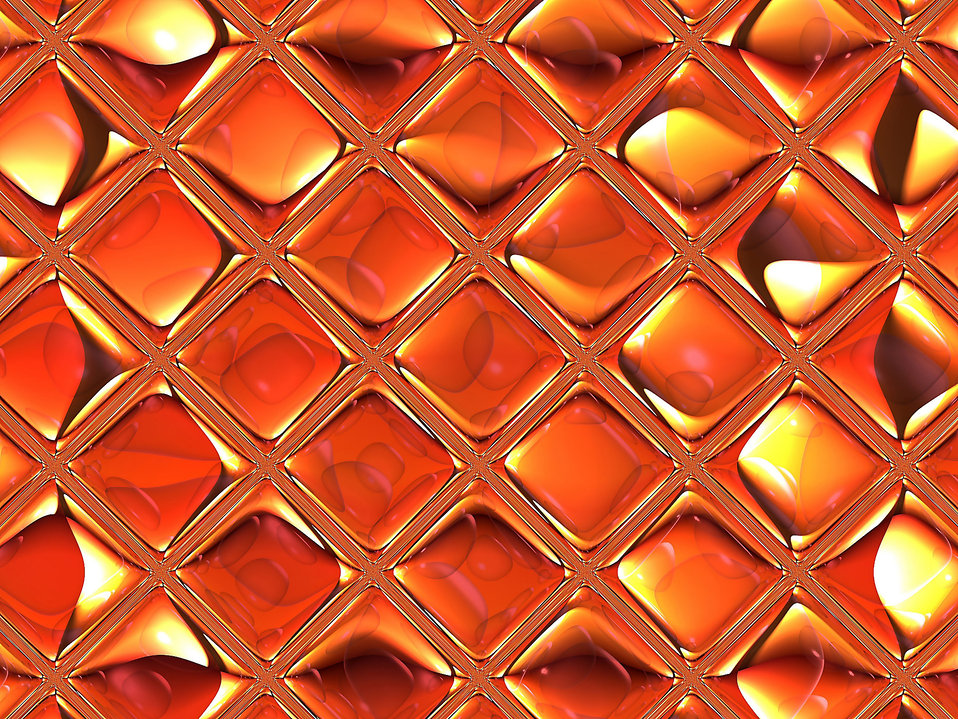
Background 348

Background glass.